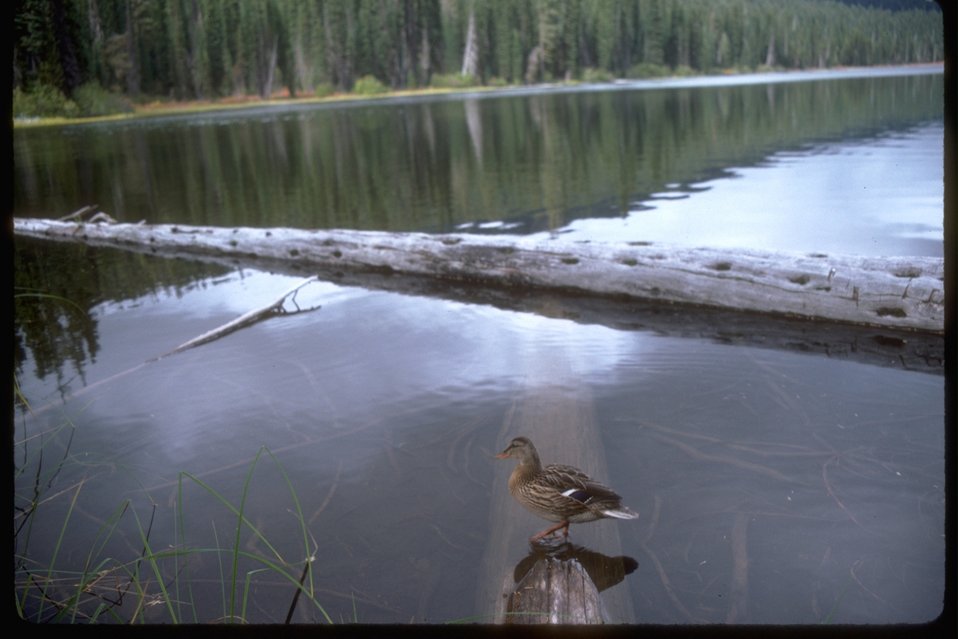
A duck sitting on a log at Hult Pond.